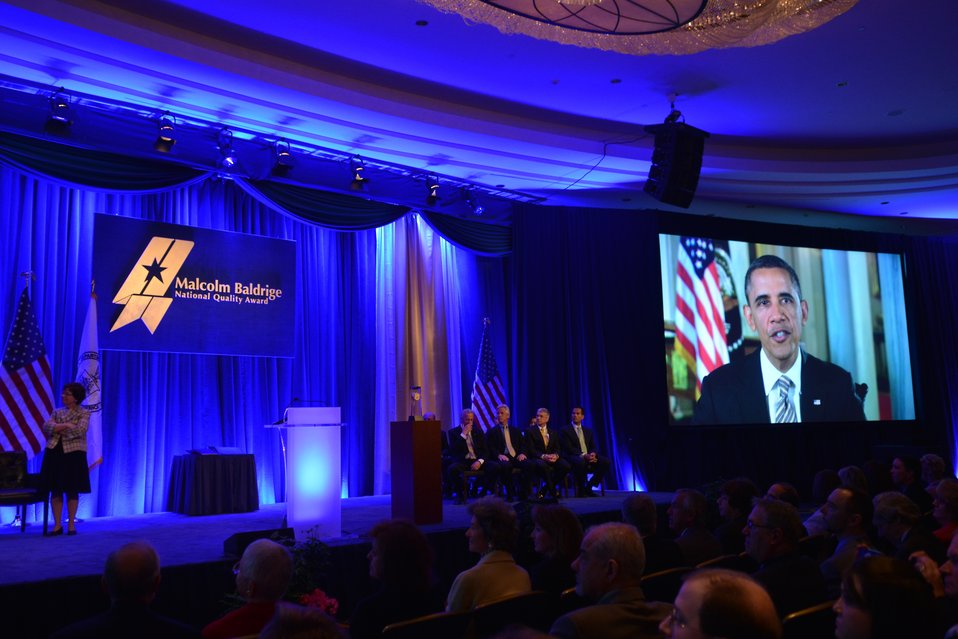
President Obama Video 2012 Baldrige Award Ceremony

President Obama video congratulating the 2012 Baldrige Award Recipients; April 8, 2013, Baltimore Marriott Waterfront